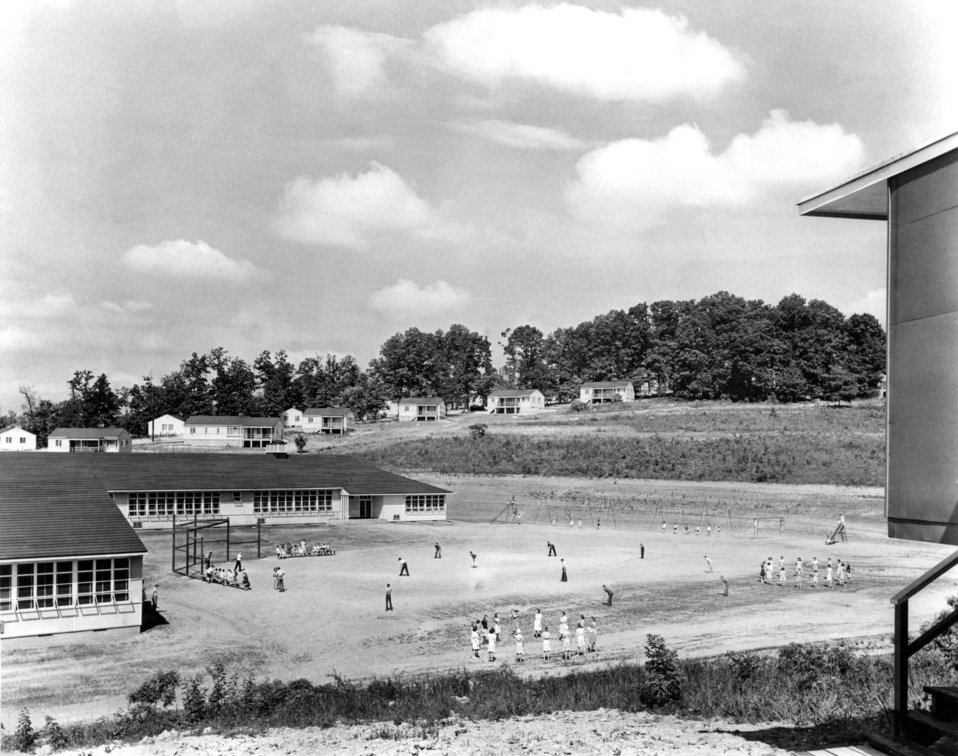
Elementary School Play Ground Oak Ridge 1944

MED-161 DOE photo Ed Westcott 1944 Oak Ridge Tennessee